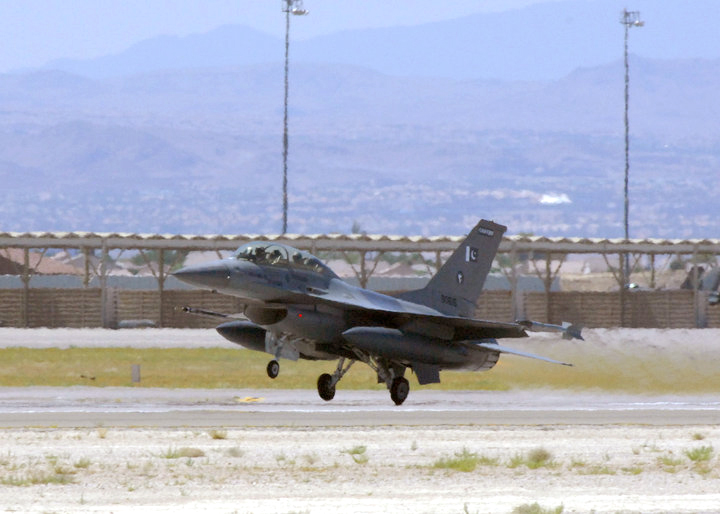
PAF at Red Flag

An F-16 from the Pakistan Air Force takes off the runway for Exercise Red Flag 10-4 July 21, 2010, at Nellis Air Force Base, Nev. Red Flag is a realistic combat training exercise involving the air forces of the U.S. and its allies.